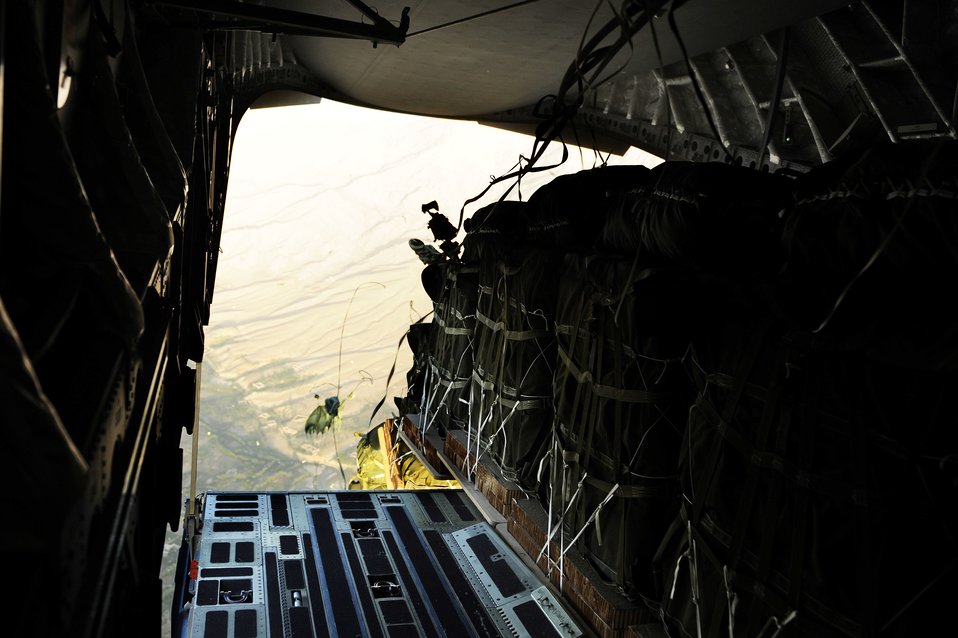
Supply drop in Afghanistan

Pallets of cargo drop from a C-17 Globemaster III to a forward operating base in Afghanistan, Aug. 27, 2009, in support of Operation Enduring Freedom. The aircraft is assigned to the 817th Expeditionary Airlift Squadron.